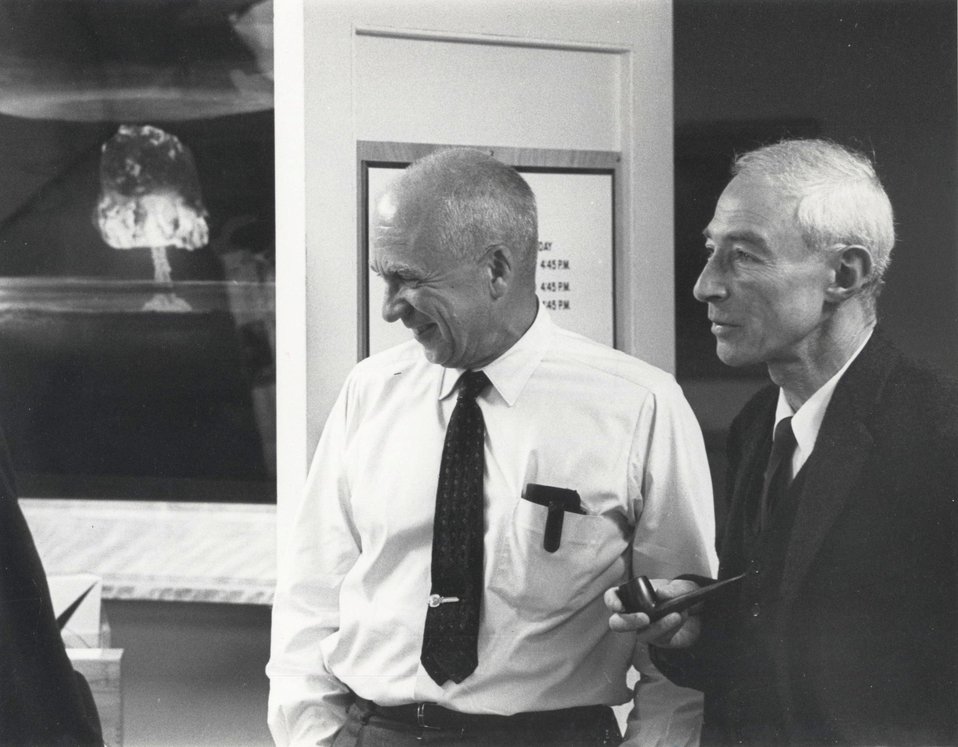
BRADBURY AND OPPENHEIMER